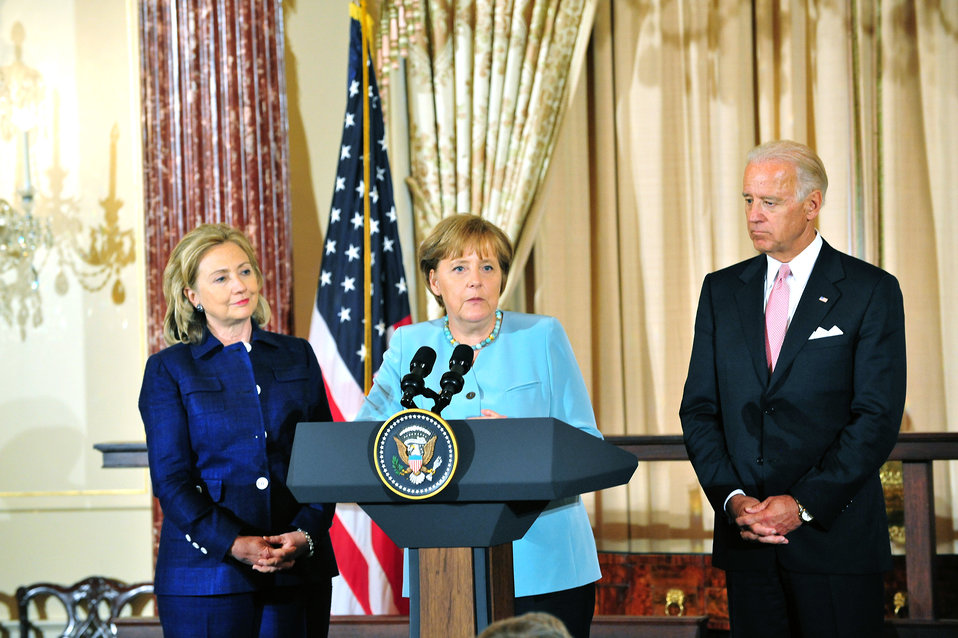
German Chancellor Merkel Delivers Remarks

German Chancellor Angela Merkel delivers remarks at a State Luncheon hosted in her honor by U.S. Vice President Joseph Biden and Dr. Jill Biden, and U.S. Secretary of State Hillary Rodham Clinton, at the U.S. Department of State in Washington, D.C., on June 7, 2011.